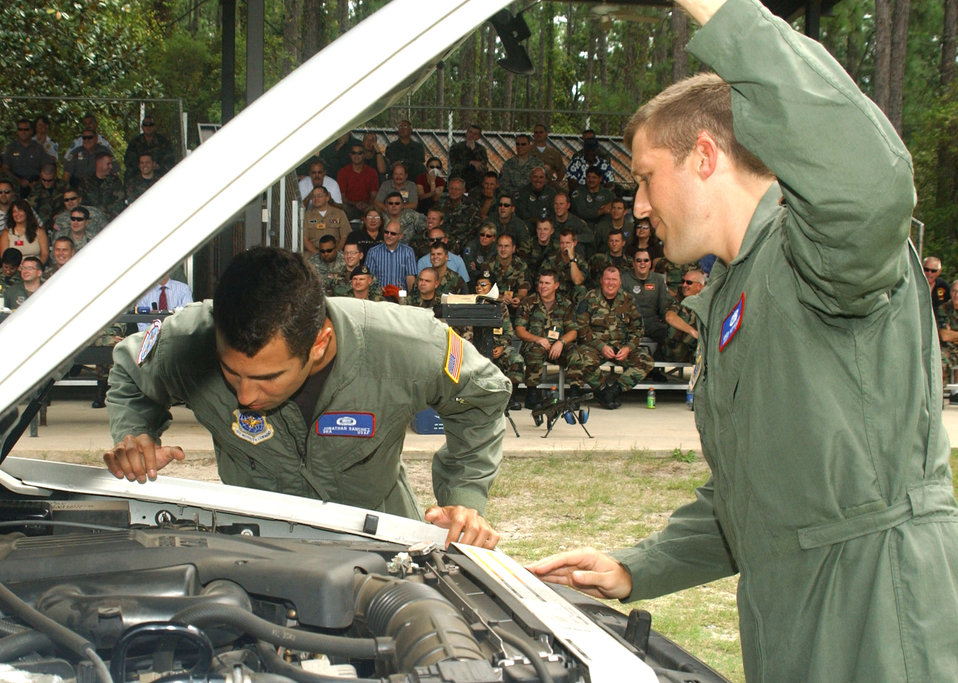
Dynamics of terrorism

Senior Airman Jonathan Sanchez (left) and Staff Sgt. Greg Nercessian inspect a vehicle for explosive devices during training at Hurlburt Field, Fla., Sept. 13. The Airmen are attending the U.S. Air Force Special Operations School's Dynamics of International Terrorism course, which offers students a basic awareness of the motivation, capabilities and threat posed by terrorist groups. The Airmen are with the 452nd Operational Support Squadron at March Air Reserve Base, Calif.